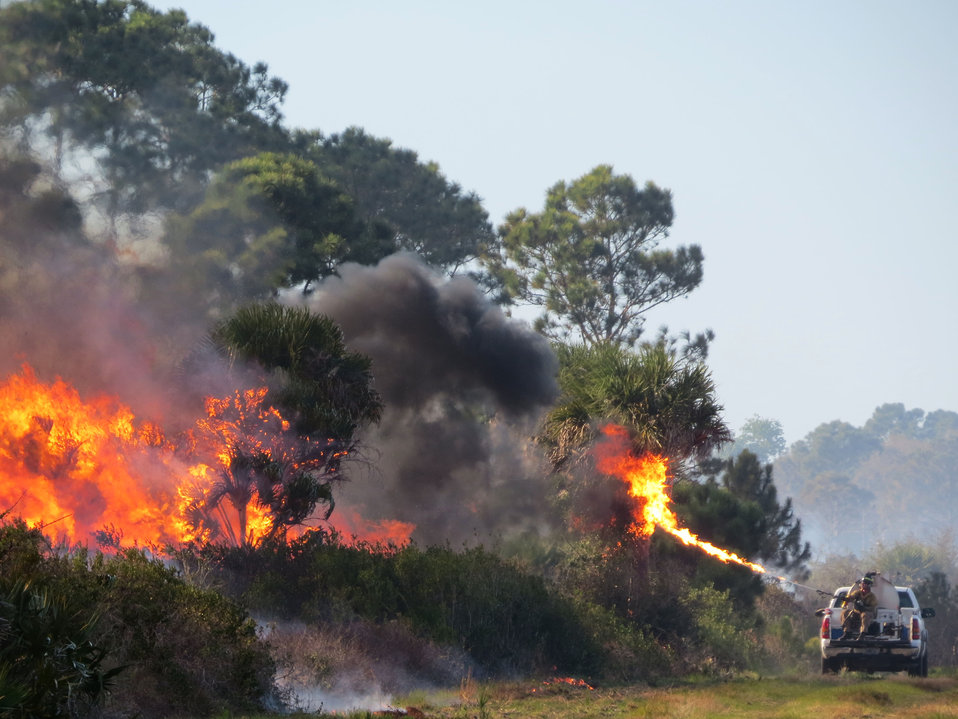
Merritt Island RX Fire Unit 4.2 03/08/14

USFWS firefighters conduct a prescribed fire at Merritt Island NWR just east of the refuge office south of the Max Brewer Parkway and west of the NASA Shuttle Landing Facility.